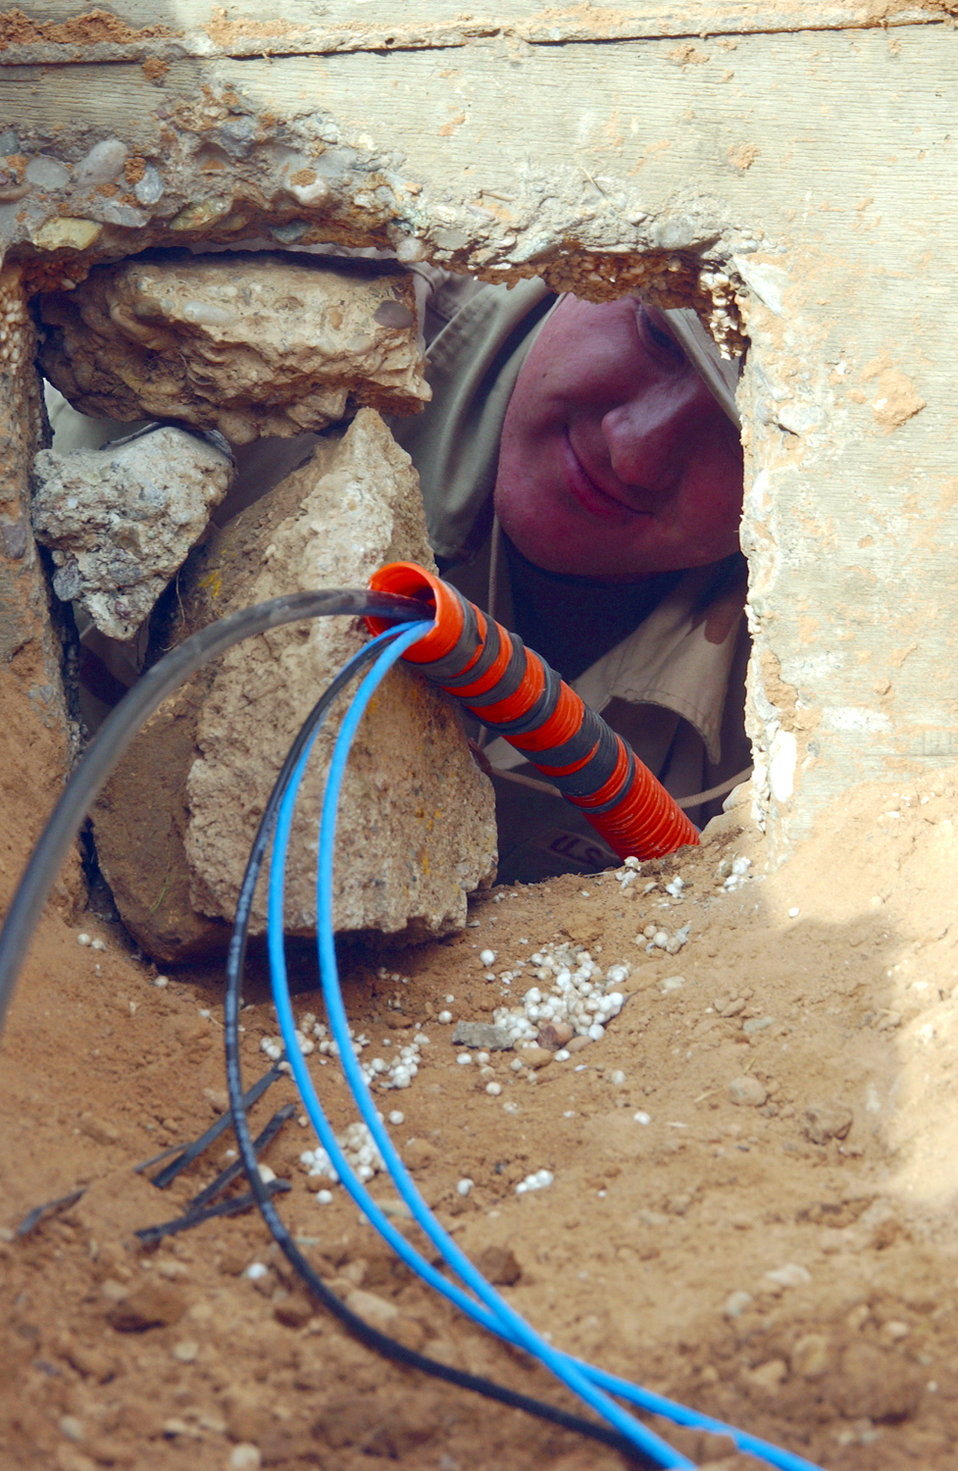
Wired in Kirkuk

KIRKUK AIR BASE, Iraq -- Staff Sgt. Wade Straley routes fiber optic and copper cable through an opening in a wall here. Airmen with the 506th Expeditionary Communications Squadron have installed more than 45,000 feet of cable to 55 facilities to support telephone and computer network communications for deployed forces. Straley is a cable maintenance technician with the squadron.